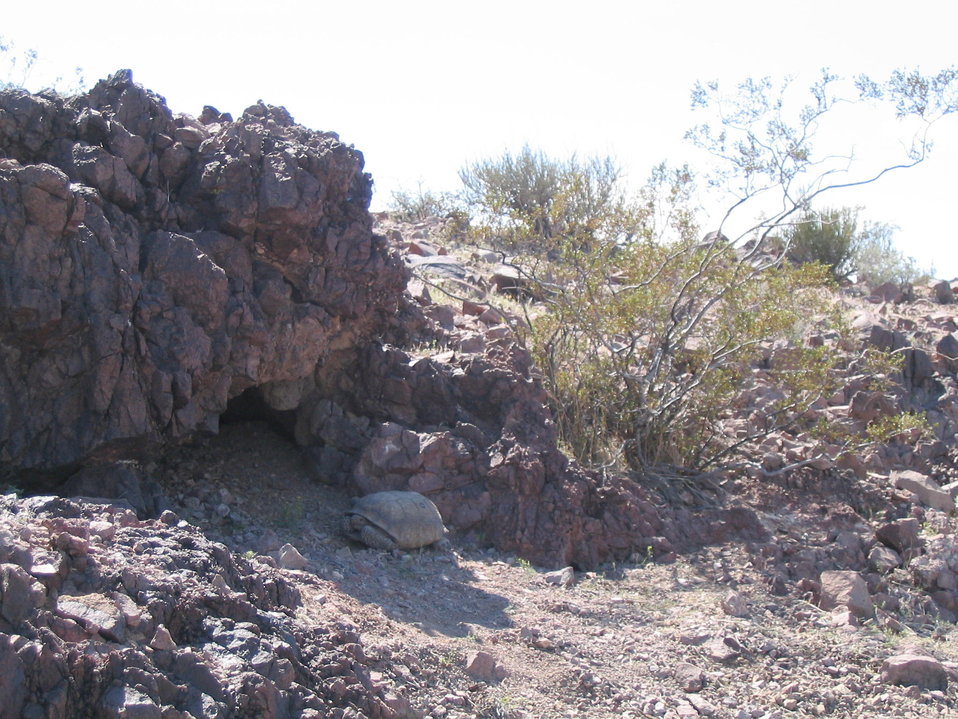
Mojave Desert Tortoise (Gopherus agassizii)

Desert tortoise (Gopherus agassizii) commonly known as the Mojave desert tortoise.